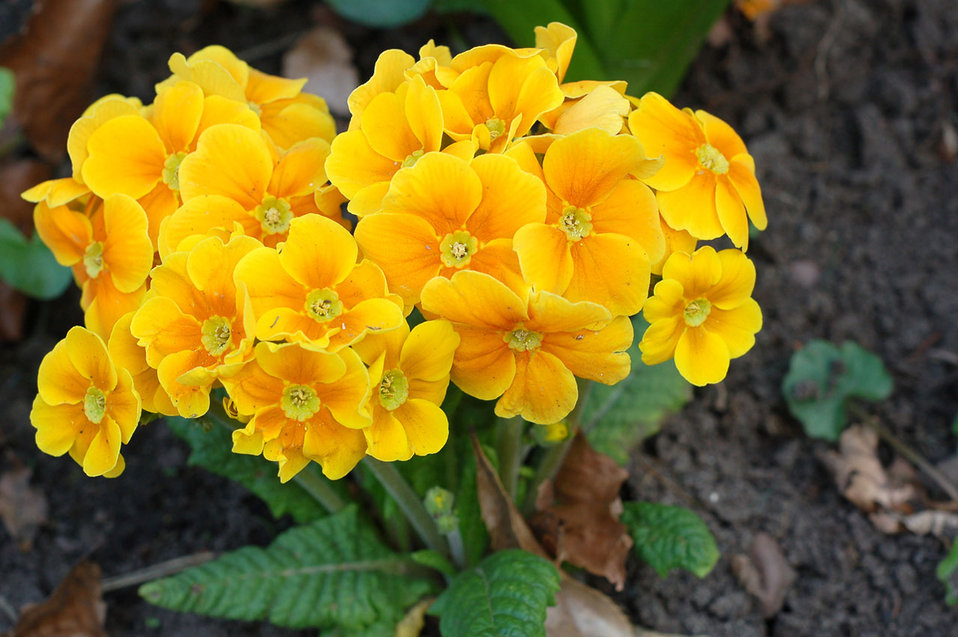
Orange primrose flowers.